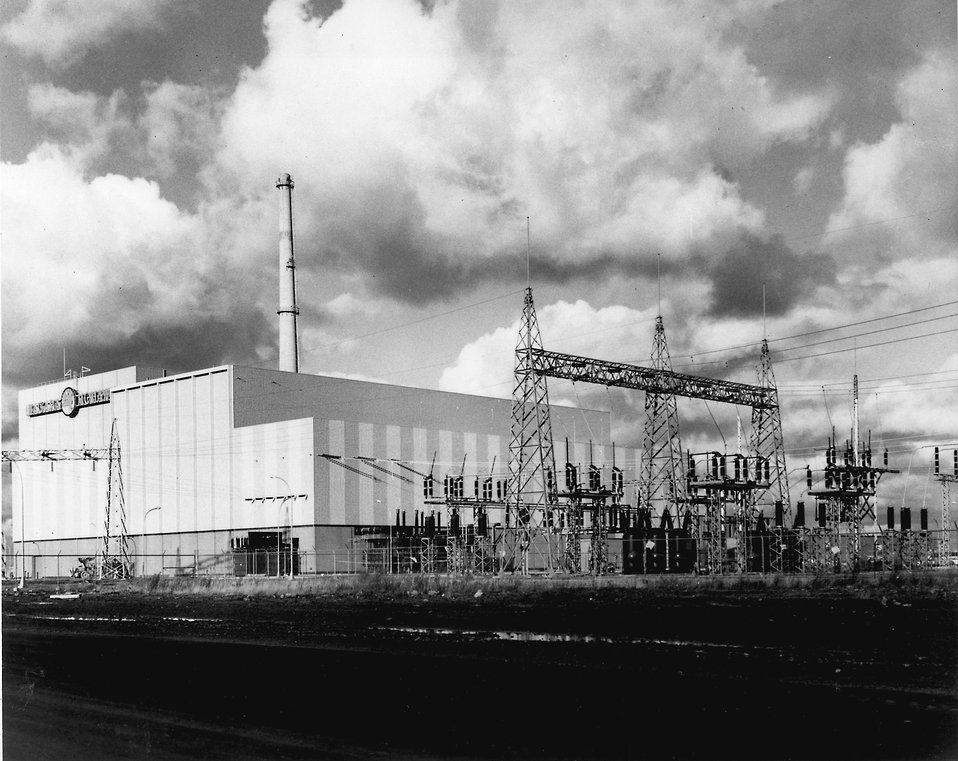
Scriba, New York... Nine Mile Point Atomic Plant... The Niagara Mohawk Power Corporation's 500,000- kilowatt nuclear power station at Scriba, six miles east of Oswego, New York. Circa 1969.